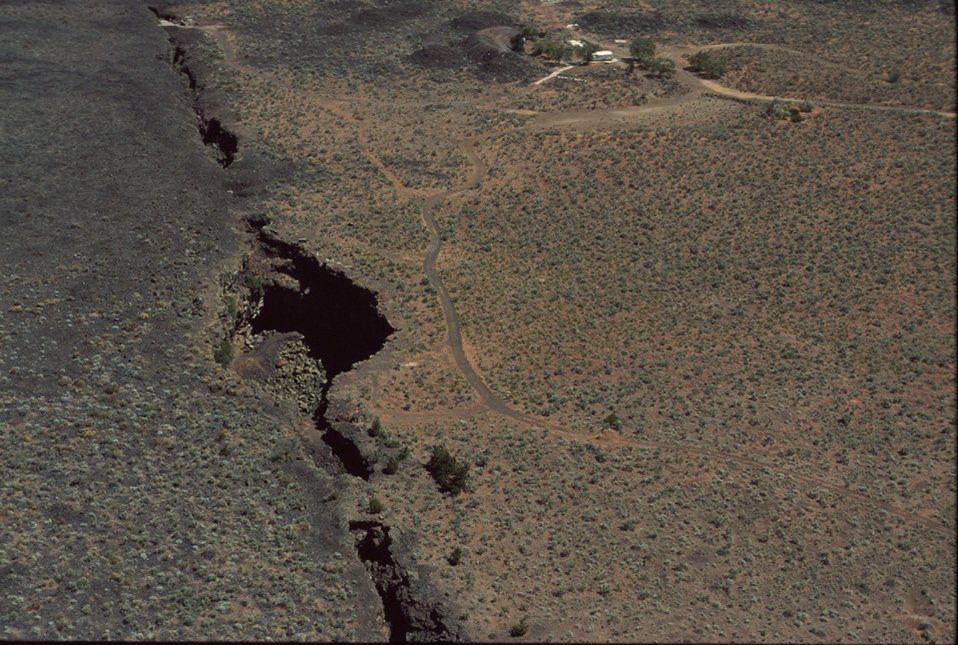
Craters of the Moon National Monument Shoshone Field Office USRD Upper Snake River District